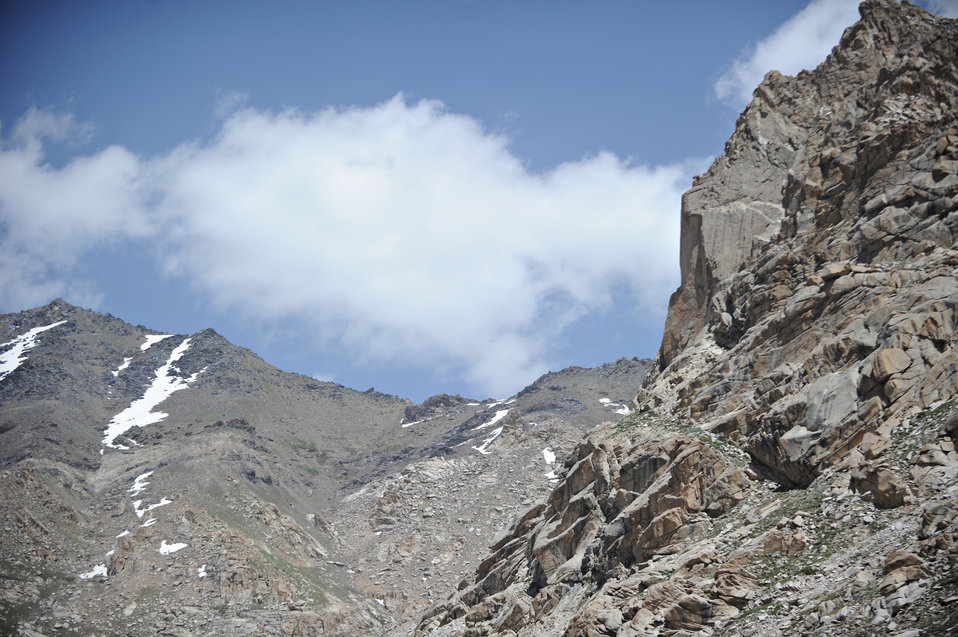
Near the North end o the Salang Tunnel on the border of Parwan and Baghlan Provinces, Afghanistan, on Wednesday, June 15, 2011. (S.K.Vemmer/Department of State)